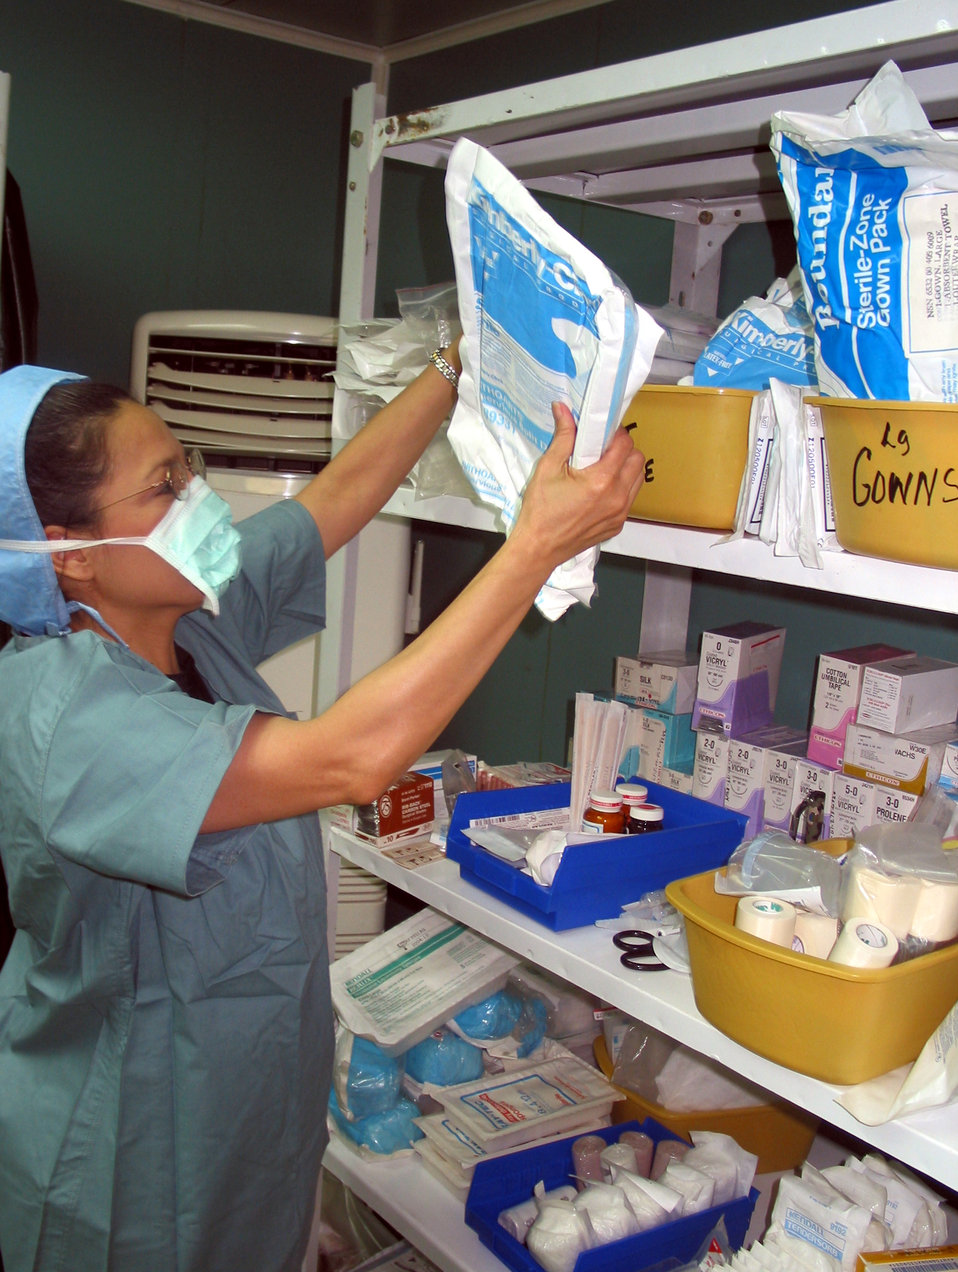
Surgical team ready for duty

MANAS AIR BASE, Kyrgyzstan -- Maj. Delia Zorrilla checks surgical supplies. She is part of the 376th Expeditionary Medical Group's surgical team.